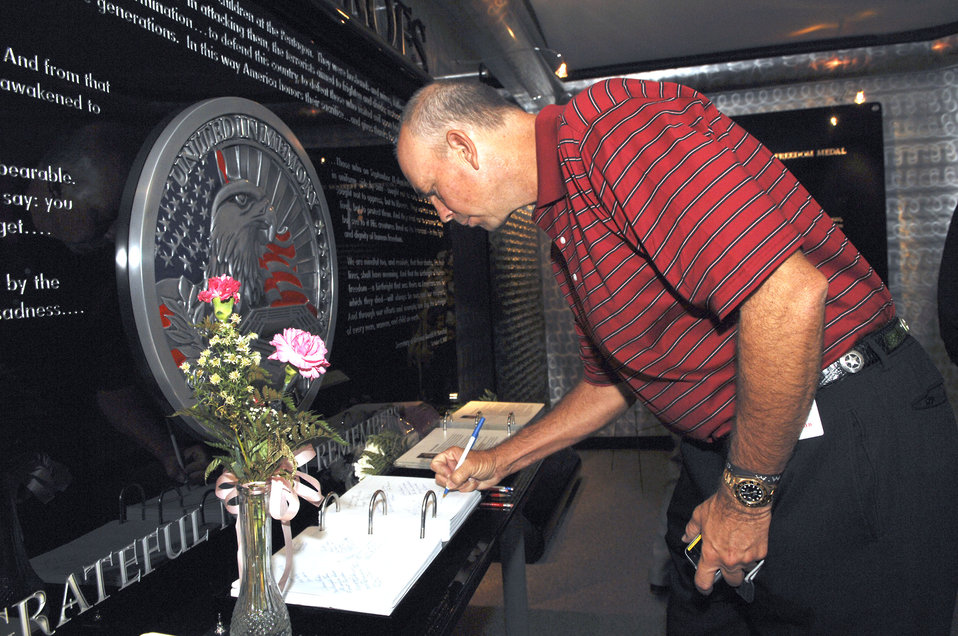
PGA champions visit Pentagon

U.S. Ryder Cup Captain Tom Lehman signs the guestbook of the memorial room for victims of 9/11 during his vist to the Pentagon Sept. 17. The Ryder Cup team visited the Pentagon and then met wounded servicemembers at Walter Reed Army Medical Center, before departing for Ireland to compete in the Ryder Cup Challenge.